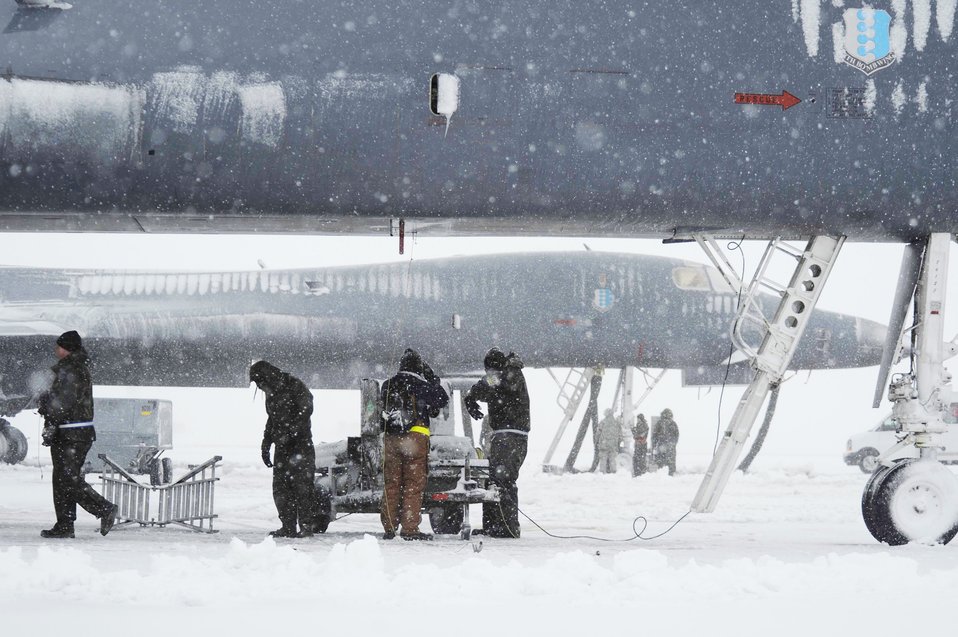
Cold and snow no obstacle for Ellsworth maintainers

Airmen of the 28th Maintenance Group keep the B-1B Lancer functional Oct. 29, 2009, at Ellsworth Air Force Base, S.D. Despite the extreme cold and large snowfall in the South Dakota climate, the maintainers are on constant standby to assure all aircraft are ready for take-off at all times.